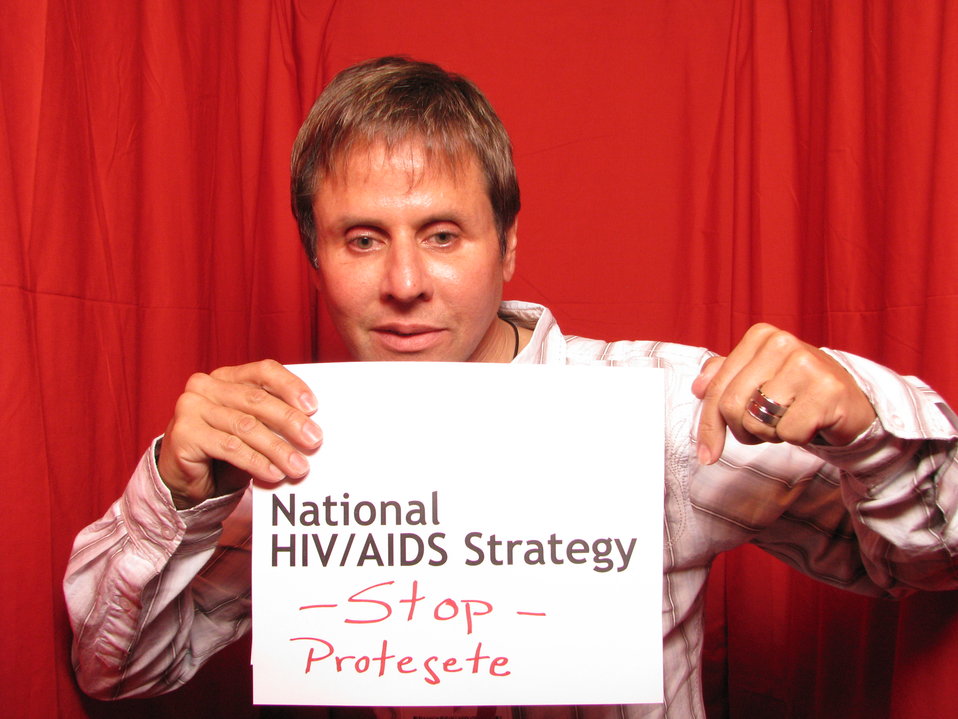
National HIV/AIDS Strategy -Stop- Protegete

From the AIDS.gov photo booth at the U.S. Conference on AIDS, September 2010 (Orlando, FL).